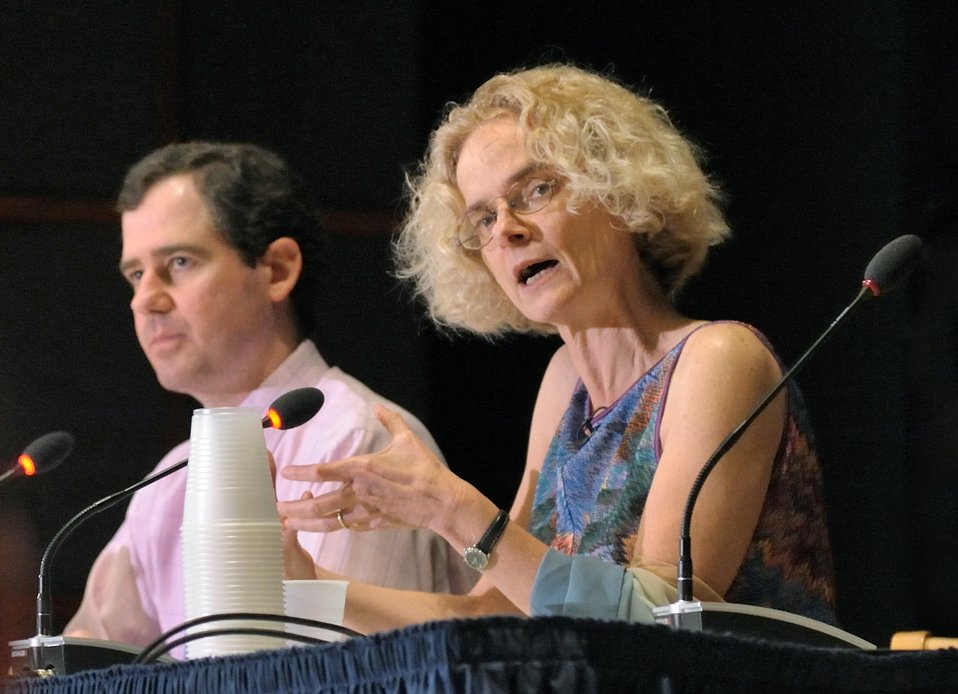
Panelists4 - APP Aug 2011

Expert panelists give their reactions following actors’ readings at NIDA’s Addiction Performance Project, held Aug 5 on the NIH Campus
(Pictured L-R: Dr. Paul Christo, pain medicine specialist at Johns Hopkins Medicine and Dr. Nora Volkow, NIDA Director)